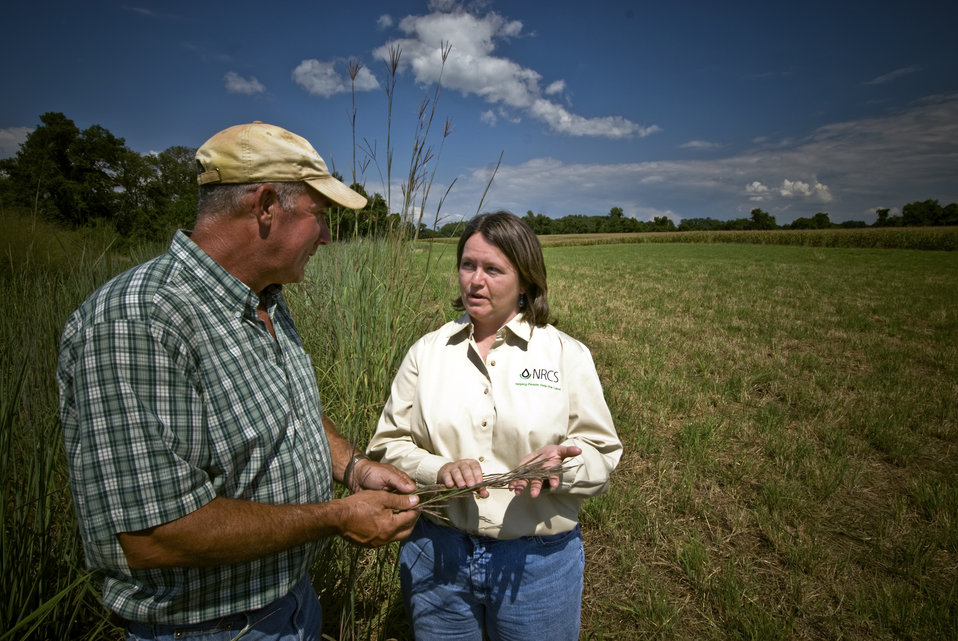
A U.S. Department of Agriculture (USDA) Natural Resource Conservation Service (NRCS) agent assists a local farmer in improving his conservation practices in order to protect the Chesapeake Bay watershed in Talbot County, Maryland on August 12, 2008.